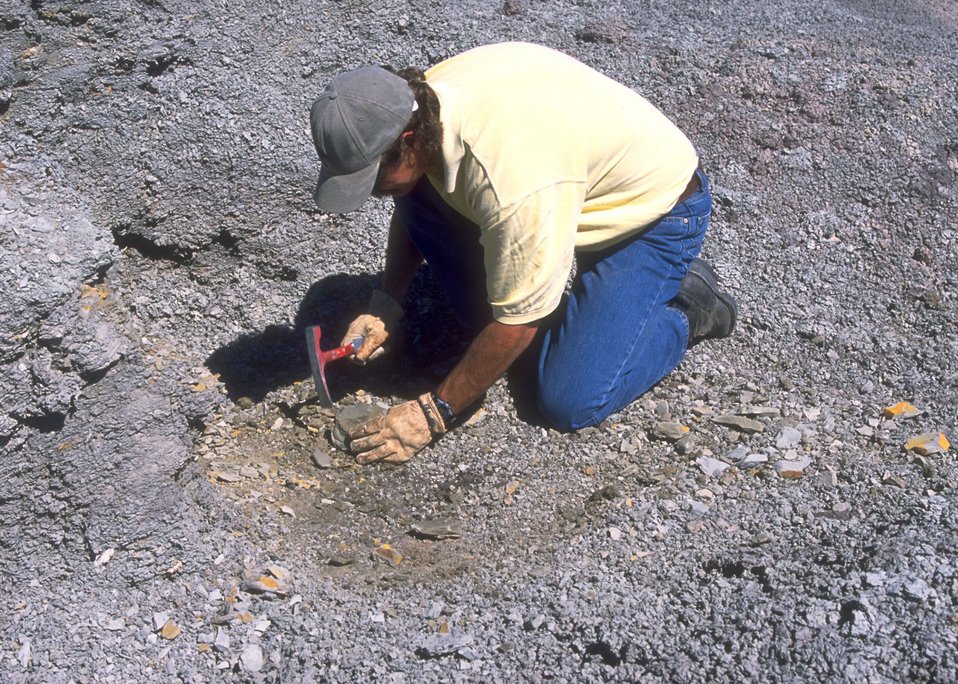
Dave Baker, WFO, examining fossils at the Cedar Ridge Paleo area, Lander Field Office.